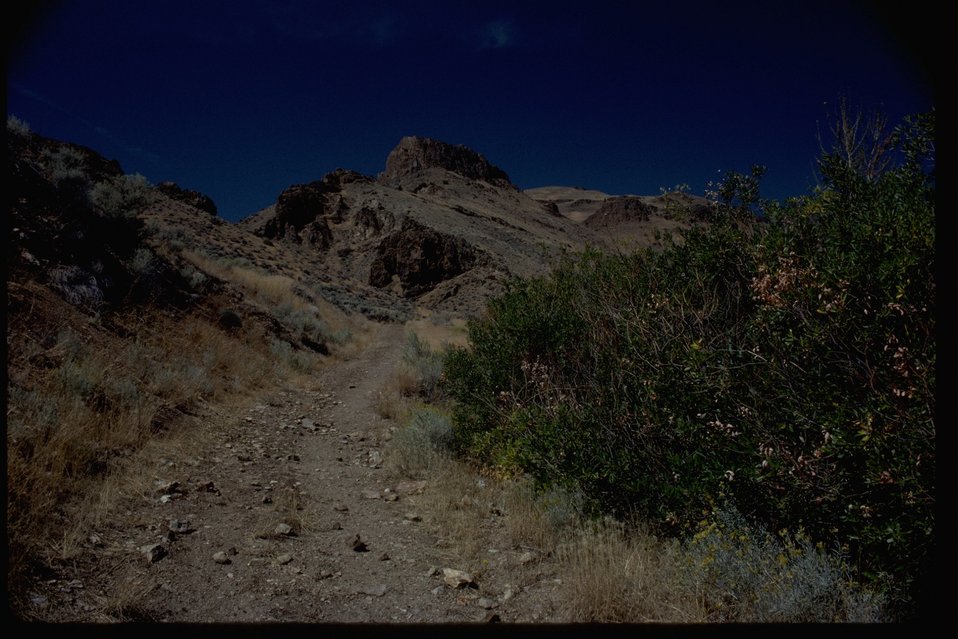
Pike Creek trail on the east side of Steens Mountain.